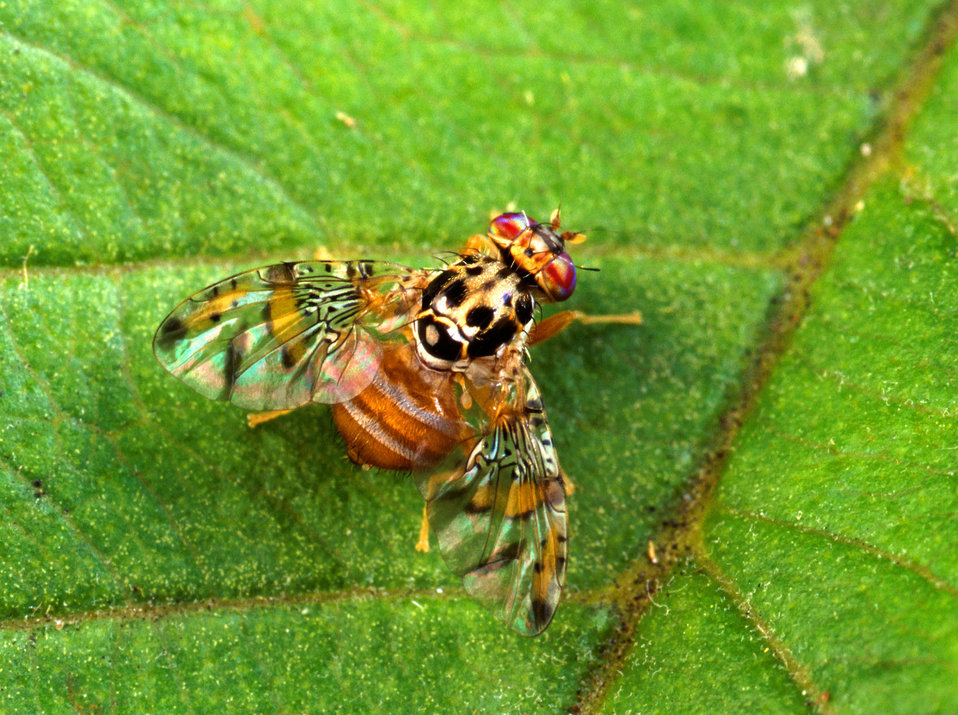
Male medfly rests on a leaf.